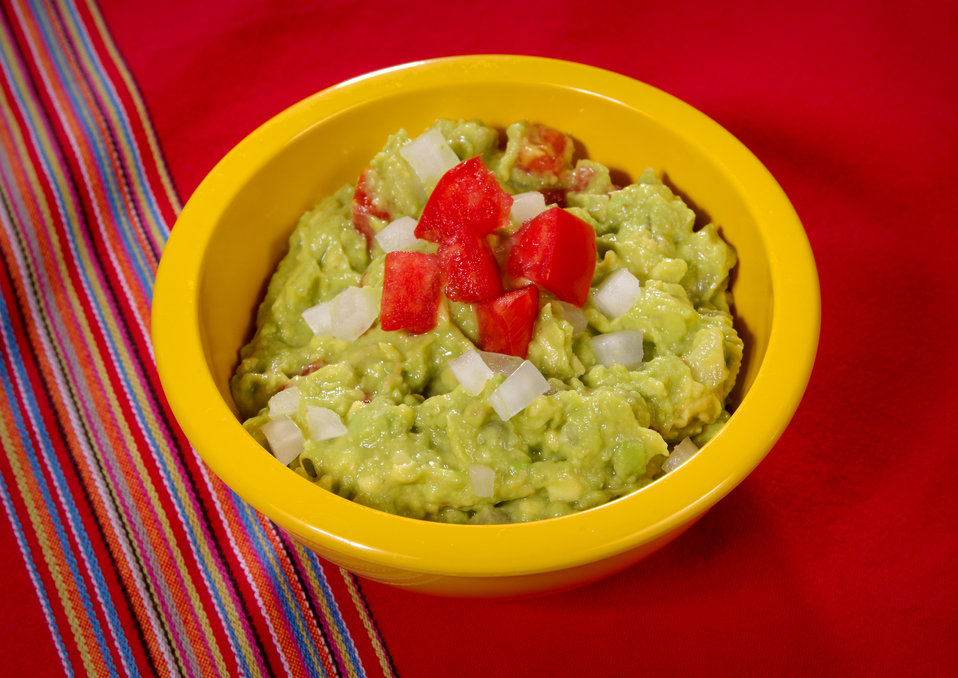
Here's a healthy dish consisting of avocado, onion, tomato, cilantro, lime juice, and a touch of sea salt. Avocados make for a very healthy food-choice, high in fiber, vitamins K, B6, and C, folate, and raw vegetable fats. Nutrient-dense, and cholesterol-free, this makes for a great dip to accompany your meal.